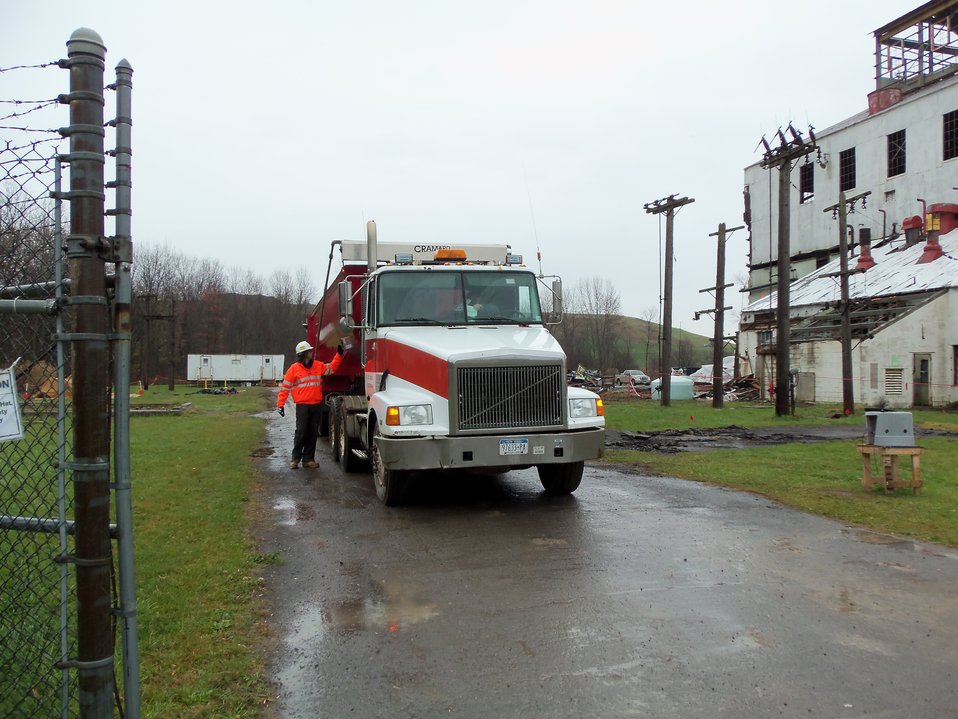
Truck leaving site.
Activities from the Niagara Falls Storage Site, which is associated with the former Lake Ontario Ordnance Works. Formerly Utilized Sites Remedial Action Program (FUSRAP), a program initiated in 1974 to identify, investigate and clean up or control sites that were part of the Nation's early atomic energy and weapons program. Activities at the sites that are eligible for FUSRAP were conducted by Manhattan Engineer District (MED) or the Atomic Energy Commission (AEC), both predecessors of the Department of Energy (DOE). The U.S. Army Corps of Engineers was assigned management of FUSRAP by Congress in 1997.